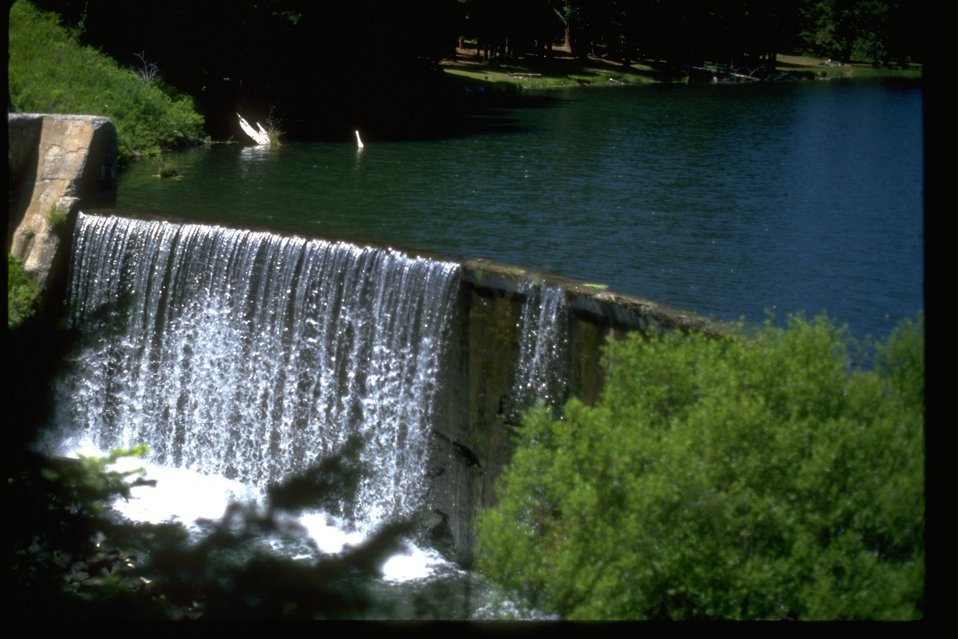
A view from above the Little Hyatt Dam. Water flowing off over the dam can be seen.